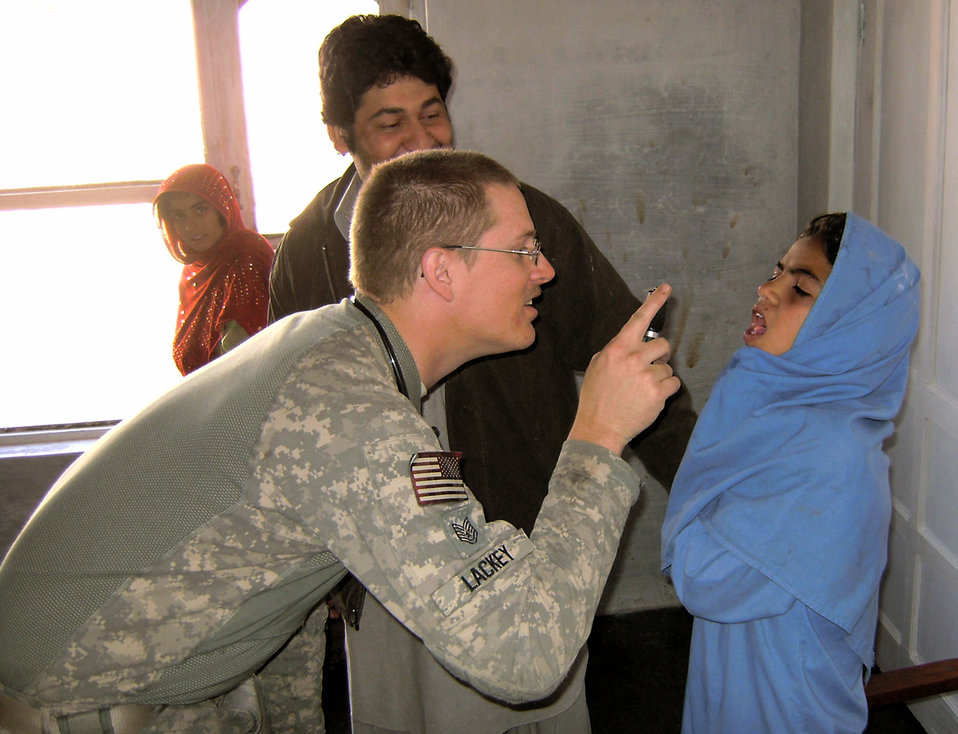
Servicemembers provide medical care to 120 Afghans

Technical Sgt. Joshua Lackey examines an Afghan girl from the Hope of Mother School, Feb. 24 in the Surkh Rod District of Afghanistan. American medics treated more than 120 people during the medical assistance operation at the school and clinic. Sergeant Lackey is a medic with the provincial reconstruction team in Afghanistan's Nangarhar province.